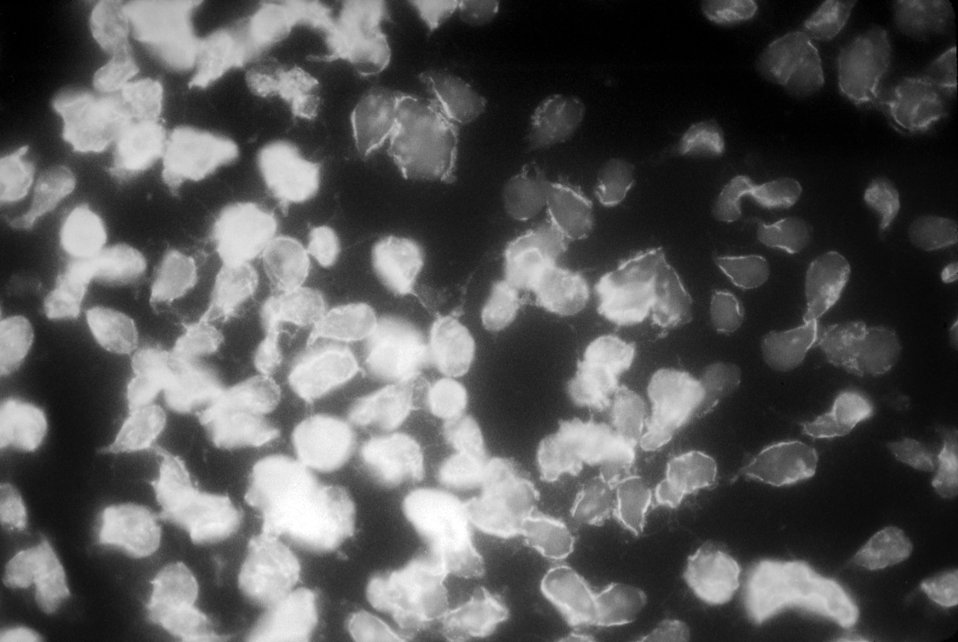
A photomicrograph of a positive indirect immunofluorescence test checking for the presence of Giardia lamblia.